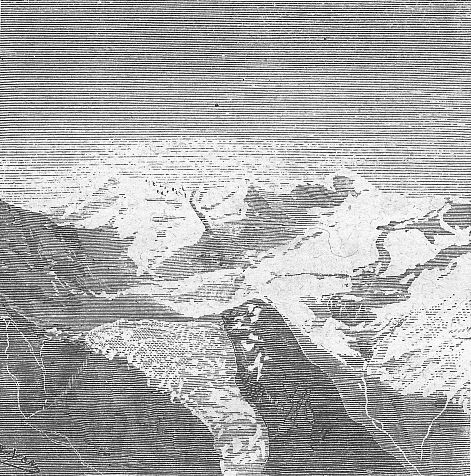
An illustration from Jules Verne's short story 'Quarantième ascension française au mont Blanc' (1871) drawn by Edmond Yon. Polski: Ilustracja opowiadania Juliusza Verne'a 'Quarantième ascension française au mont Blanc' (Czterdzieste francuskie wejście na Mont Blank , 1871) autorstwa Edmonda Yona. Français : Jules Verne: 'Quarantième ascension française au mont Blanc' (1871), dessins par Edmond Yon.